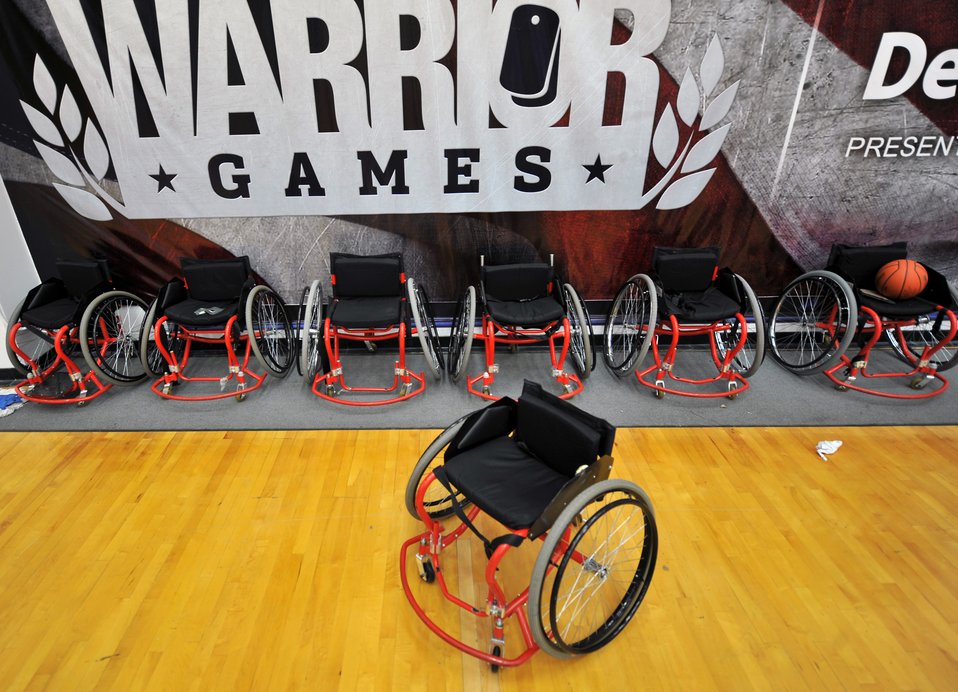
Warrior Games

Wheelchairs are lined up against a wall in the basketball court May 10, 2010, at the Olympic Training Center in Colorado Springs, Colo. Teams from the Air Force, Army, Navy, Marines and Coast Guard are participating in the inaugural Warrior Games which begin May 10 and finish May 14. One of the competition events is wheelchair basketball.